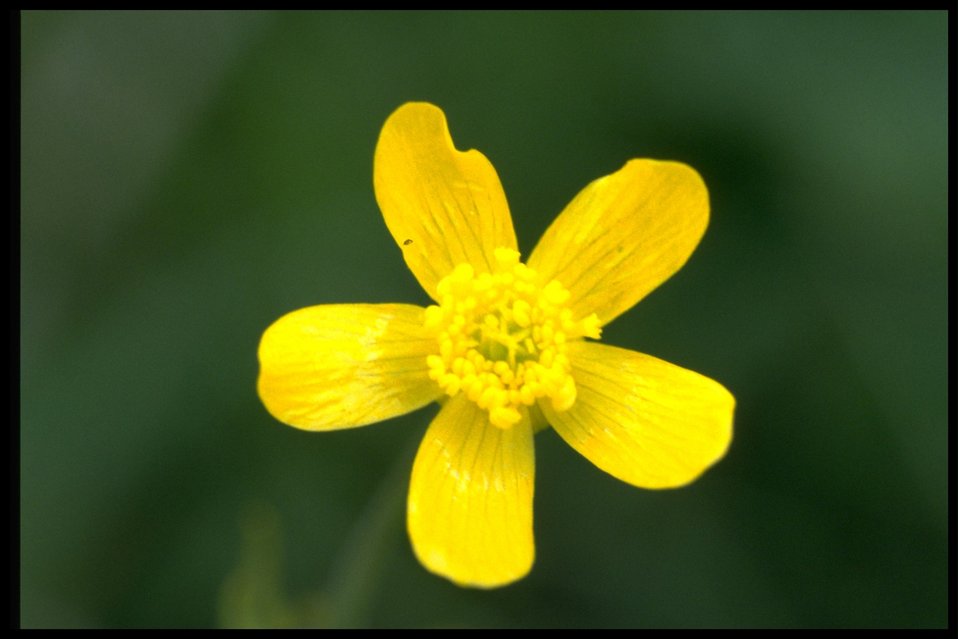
Closeup shot of western buttercup (Ranunculus Occidentalis).